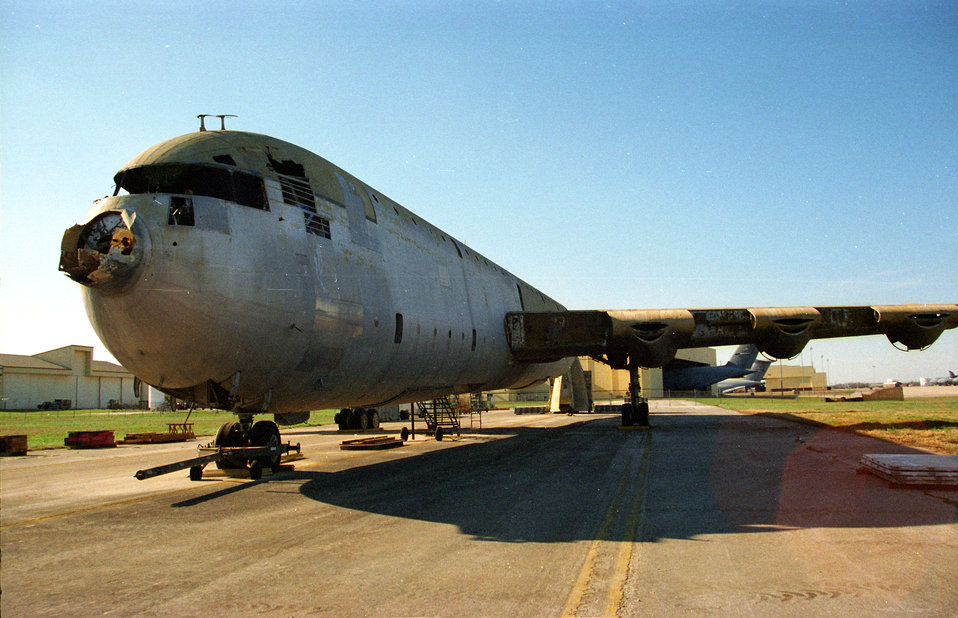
Museum move

LACKLAND AIR FORCE BASE, Texas -- The XC-99 sits on the ramp at the Kelly Annex to Lackland after Phase 1 of the dismantling process removed engines, doors, access panels, parts of the wings and tail section.